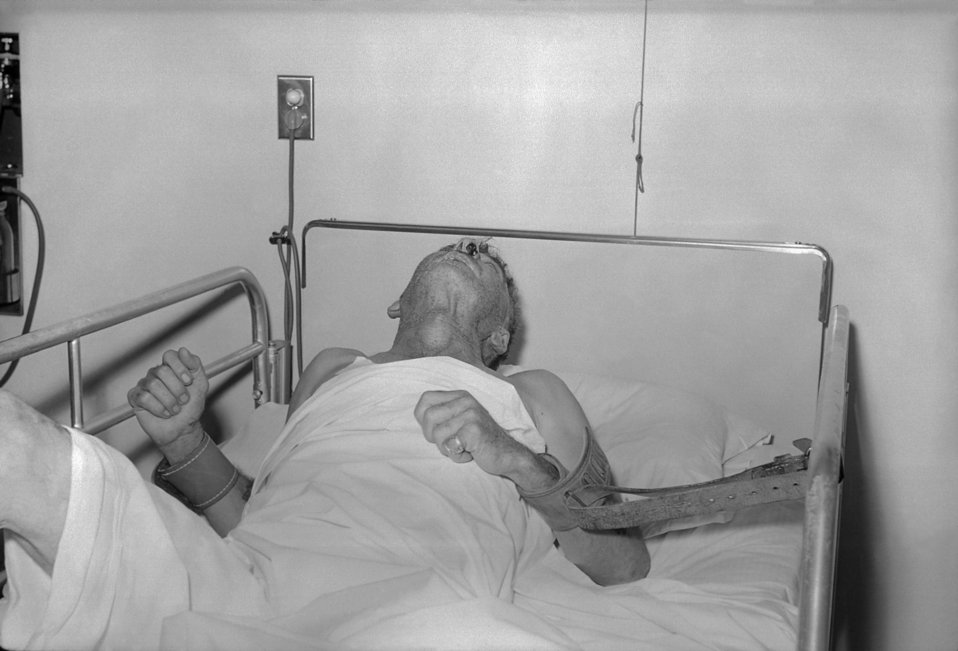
A hospitalized human rabies victim in restraints.